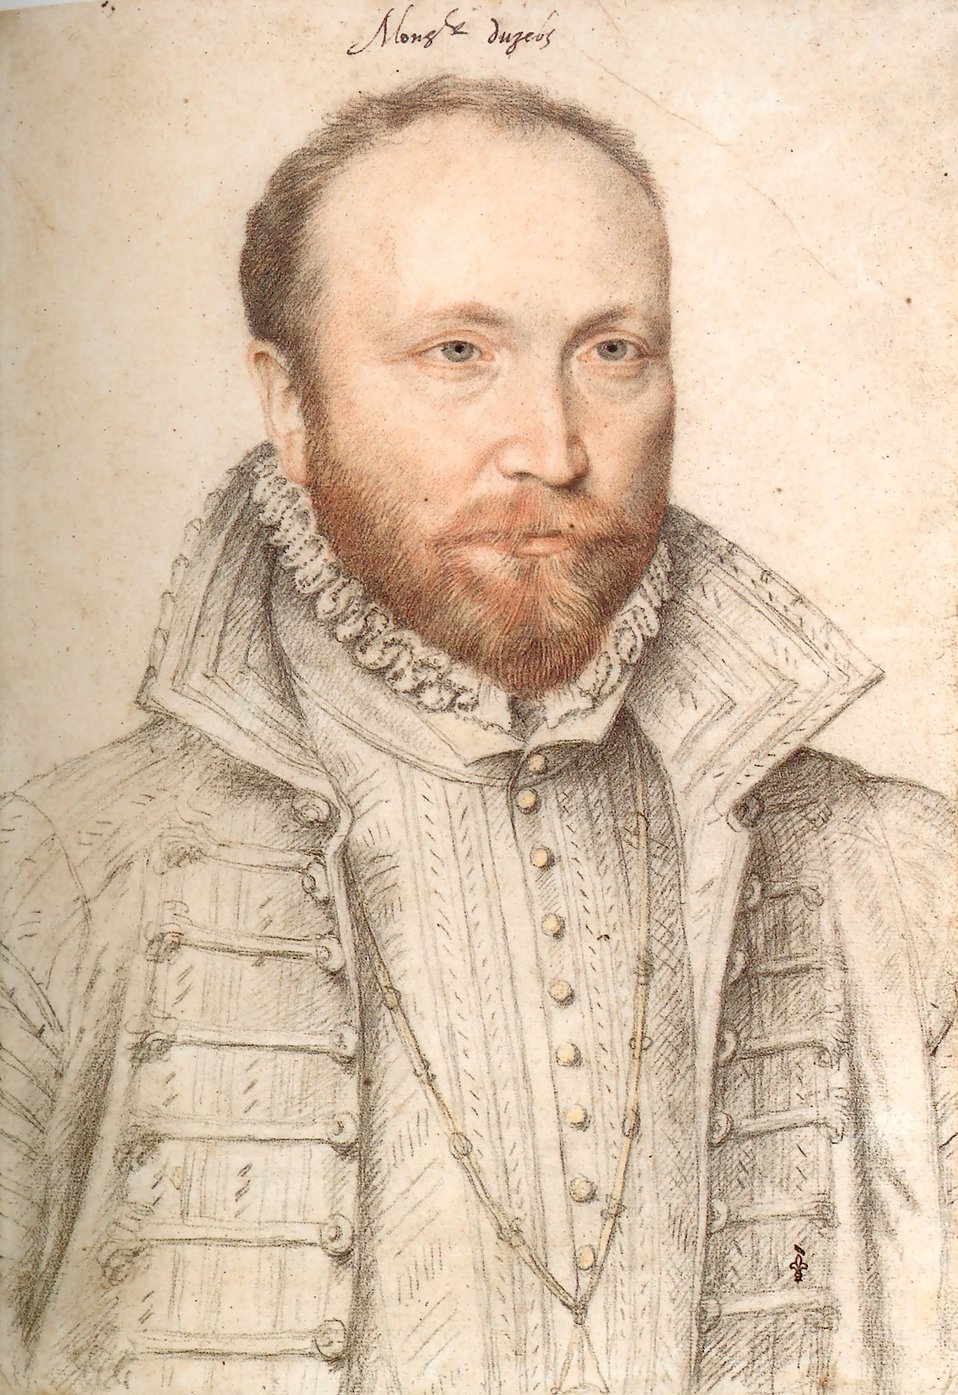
Antoine de Crussol